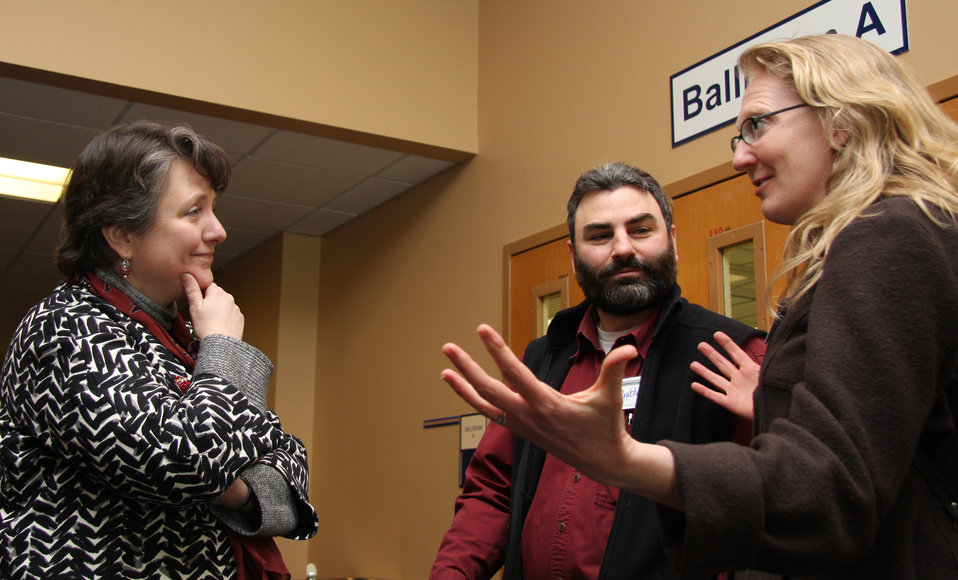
Agriculture Deputy Secretary Kathleen Merrigan (left) talks with organic farmers Doug Crabtree (center) and Anna Jones-Crabtree (right) of Havre, Montana at a small business and agriculture workshop in Bozeman, MT, on Saturday, March 26, 2011. The workshop was sponsored by Senator Jon Tester (D-MT).